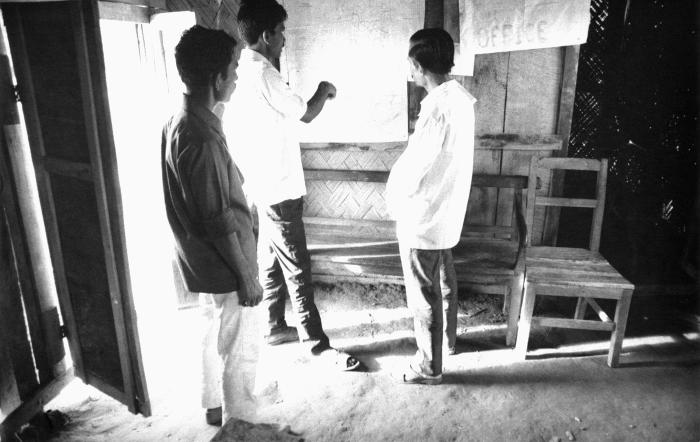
As members of the smallpox eradication team, these Bangladesh men, who were residents of this thana, were strategizing as to how to best cover all residences and business in their efforts to inform all those living, and interacting in their thana. When eradication efforts began, there was one surveillance team for each of the 5 regions. With increasing volunteerism this grew to one team for each of the 55 districts, and in some regions, one team was assigned to each 'thana'. A thana is analogous to a county in the United States. There were 415 thana to patrol.Local residents who became resident vaccinators, played a profound role in achieving a successful outcome to the eradication program. As locals, they were viewed as familiar, and trusted, and spoke the local dialect, thereby, facilitating enhanced communication with fellow inhabitants.